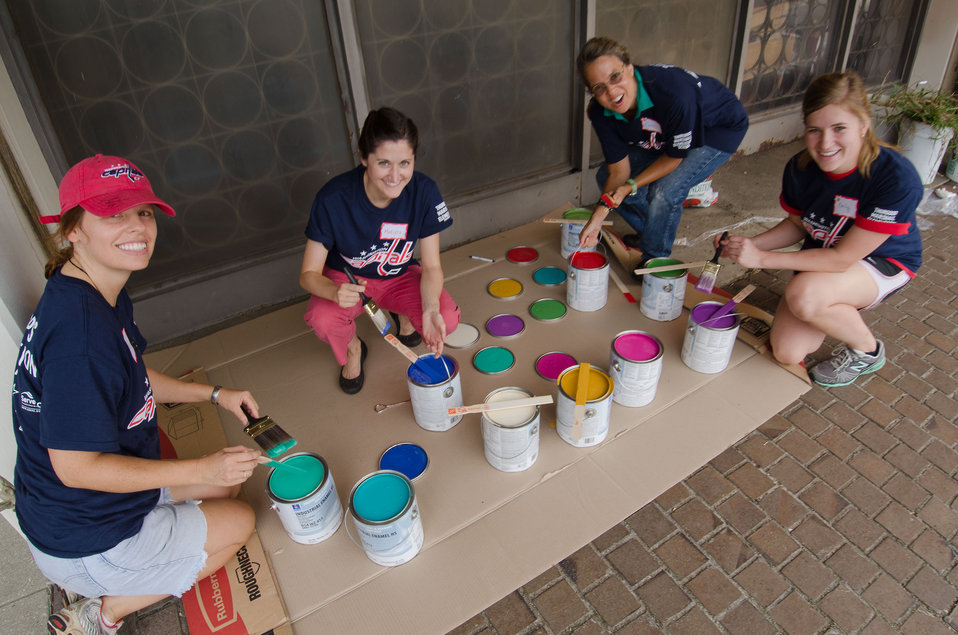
The paint crew: Ellen, Melissa, Karen, and Emily mix it up as they prepare to paint raised planter boxes when U.S. Department of Agriculture (USDA) People’s Garden Executive Master Gardeners, friends, and family, along with Washington Capitals fans volunteer in District of Columbia Public Schools’ (DCPS) Beautification Day, on Saturday, August 25, 2012, at Thurgood Marshall Elementary School, in Washington, D.C. Each year people are invited to help “spruce up” public school facilities in preparation for the first day of school. More than 70 volunteers pitched in at this large school facility. The People’s Garden effort involves building and painting raised planter boxes, then preparing the soil mixture so they are “ready to grow.” Additionally, a team that includes descendants of U.S. Supreme Court Justice Thurgood Marshall assembles a prefabricated garden toolshed. The Justice’s son, John Marshall leads the team, which includes Brianna the Justice’s great-grand daughter in one of many multi-generational efforts at this school today. Washington Capitals Forward Mike Riberio, his family and mascot Slapshot participated in every project underway at Marshall School. From the outside gardens, to inside murals, and robotics worktable construction, the teams made their goals.